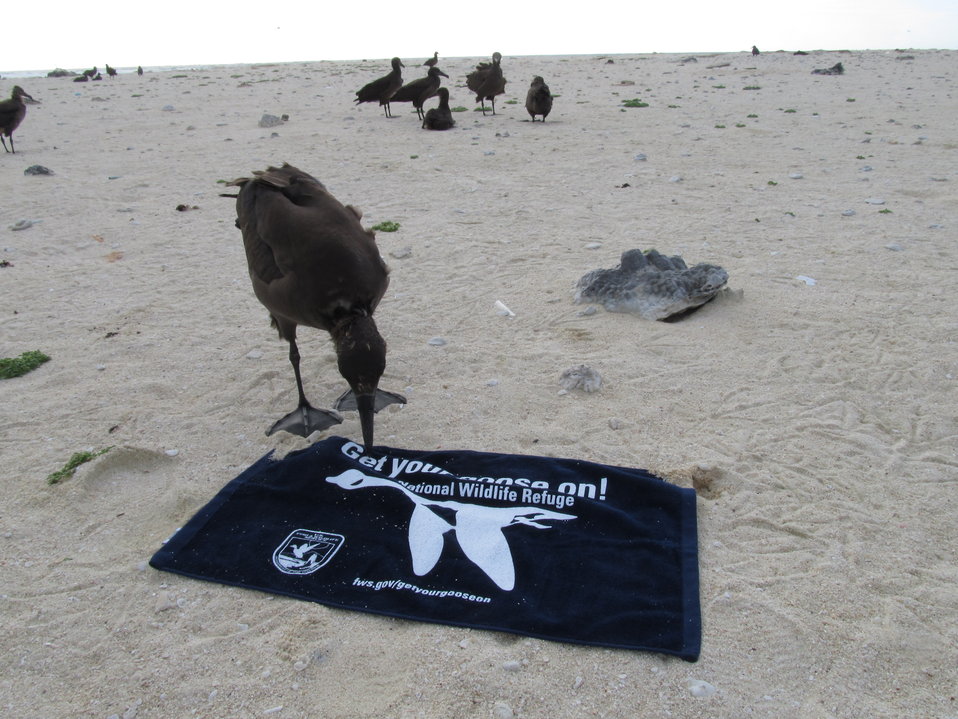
Get Your Goose On! - Albatross Style

Photo taken at Laysan Island in the Papahanaumokuakea Marine National Monument, Hawaiian Islands National Wildlife Refuge. Laysan is located approximately 800 miles northwest of Honolulu, Hawaii and is a remote field camp staffed year round for habitat restoration and population monitoring.